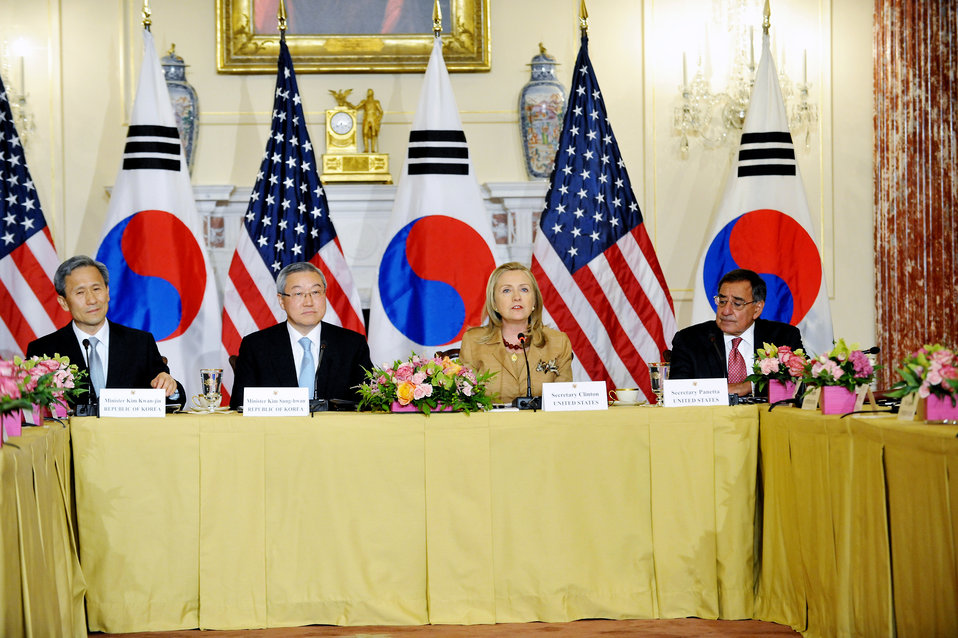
Secretary Clinton delivers remarks at the U.S.-Korea ministerial dialogue 2 2 meeting with Secretary of Defense Leon Panetta, Minister of Foreign Affairs and Trade of the Republic of Korea Kim Sung-Hwan, and Minister of National Defense of the Republic of Korea Kwan-Jin at the U.S. Department of State in Washington, D.C. on June 14, 2012.